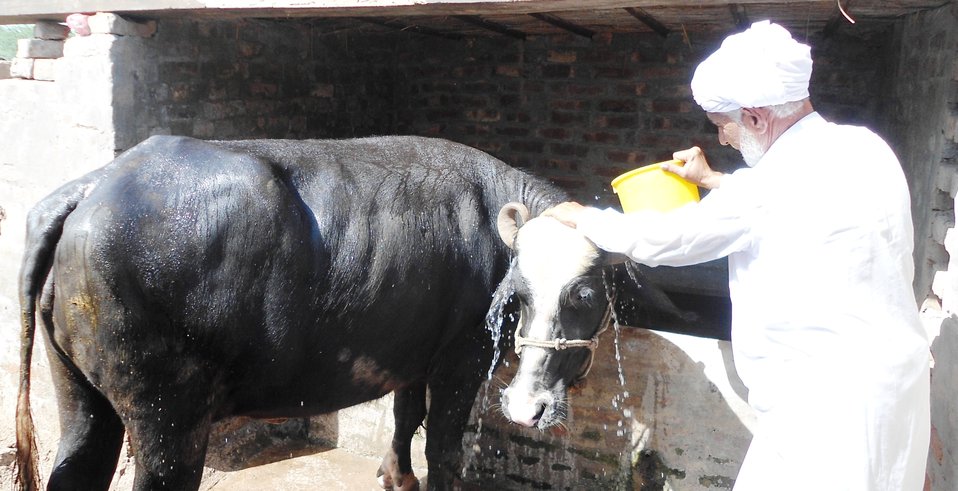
Mushtaq Ahmad, with his animals. Nearly 4,000 small dairy farmers in Punjab have been trained through this project to date.